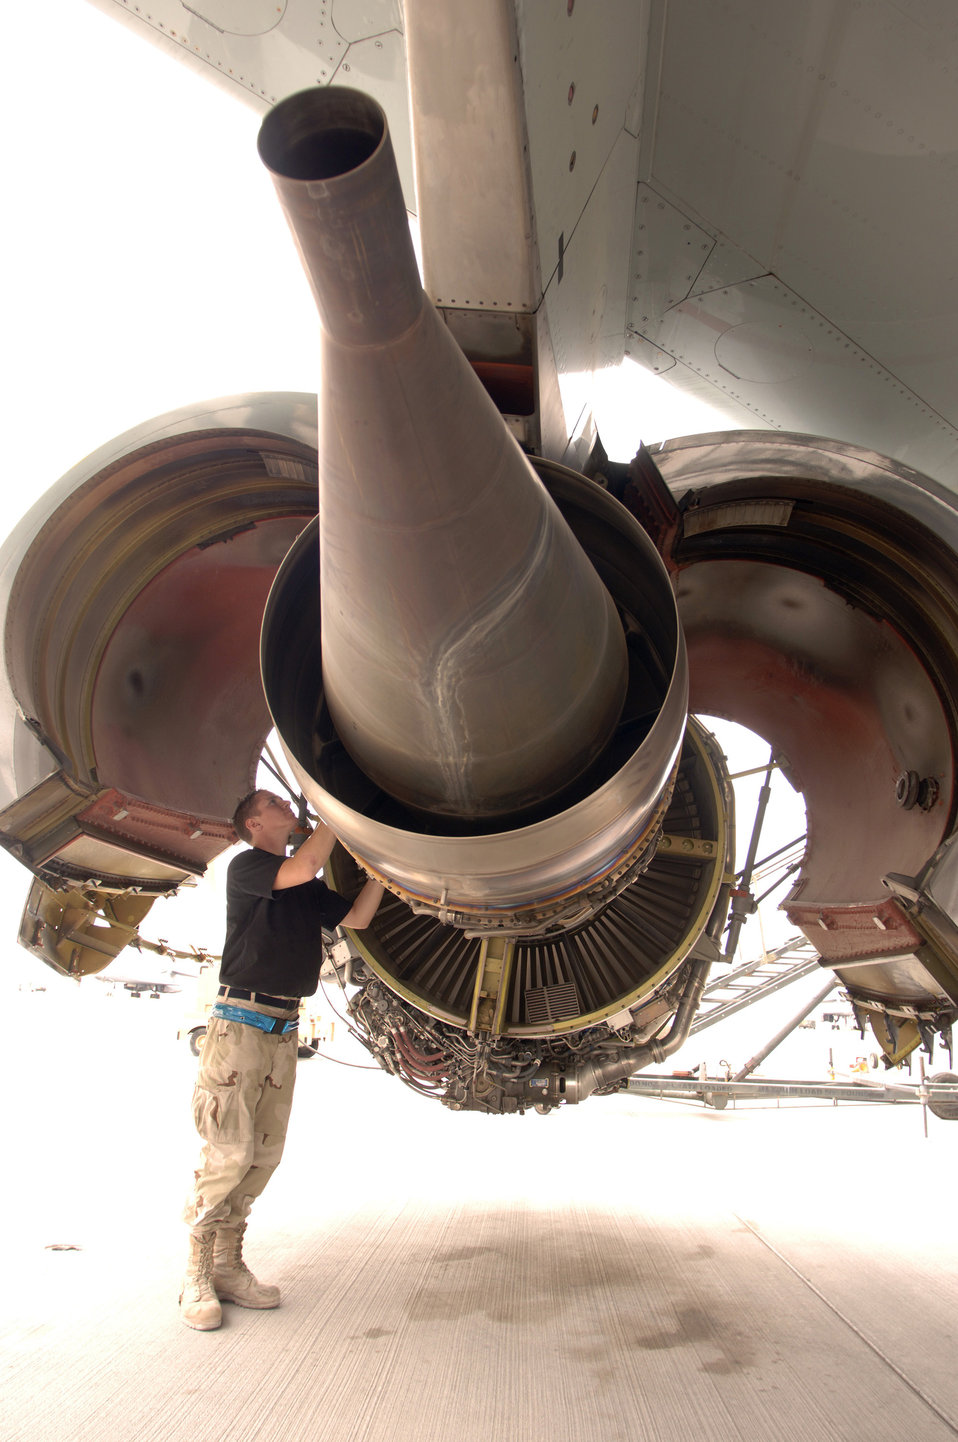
Maintainers turn Rivet Joint

Airman Mark Magill inspects the number two engine on an RC-135 Rivet Joint in Southwest Asia. The F108-model high bypass turbofan engine, introduced to the 135-airframe in August of 1998, has proven to be a reliable workhorse in transporting the heavy 275,000-pound intelligence and reconnaissance platform. Airman Magill is a jet engine mechanic deployed from the 55th Aircraft Maintenance Squadron from Offutt Air Force Base, Neb.